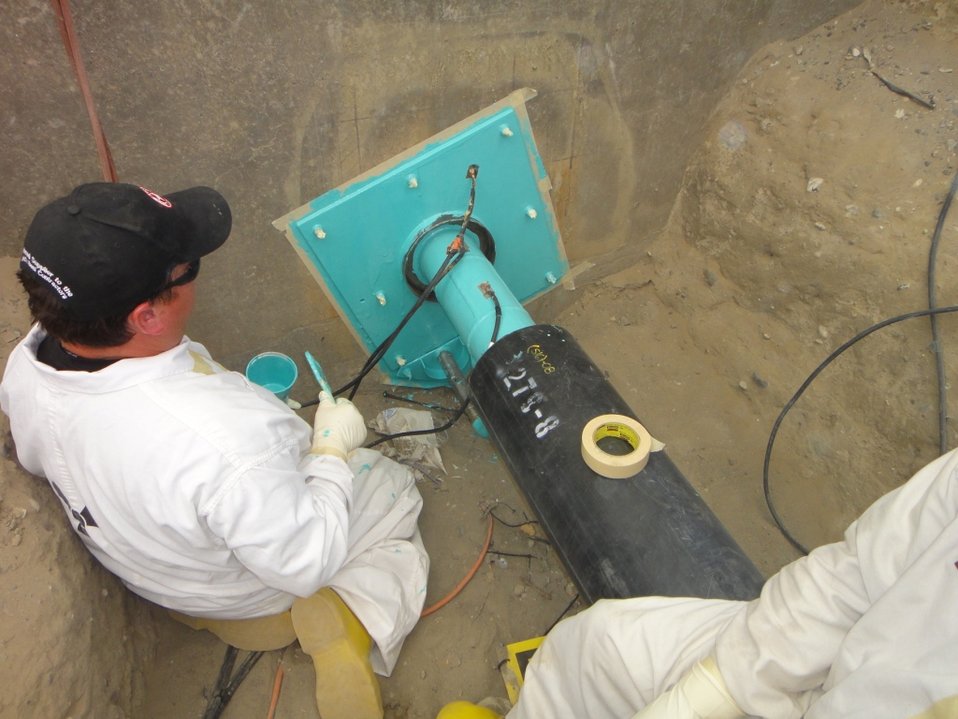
New ORP facilities

Crews at Hanford have removed and replaced nearly 800 feet of waste transfer lines that will carry waste from underground storage tanks to the new Waste Treatment Plant currently under construction.